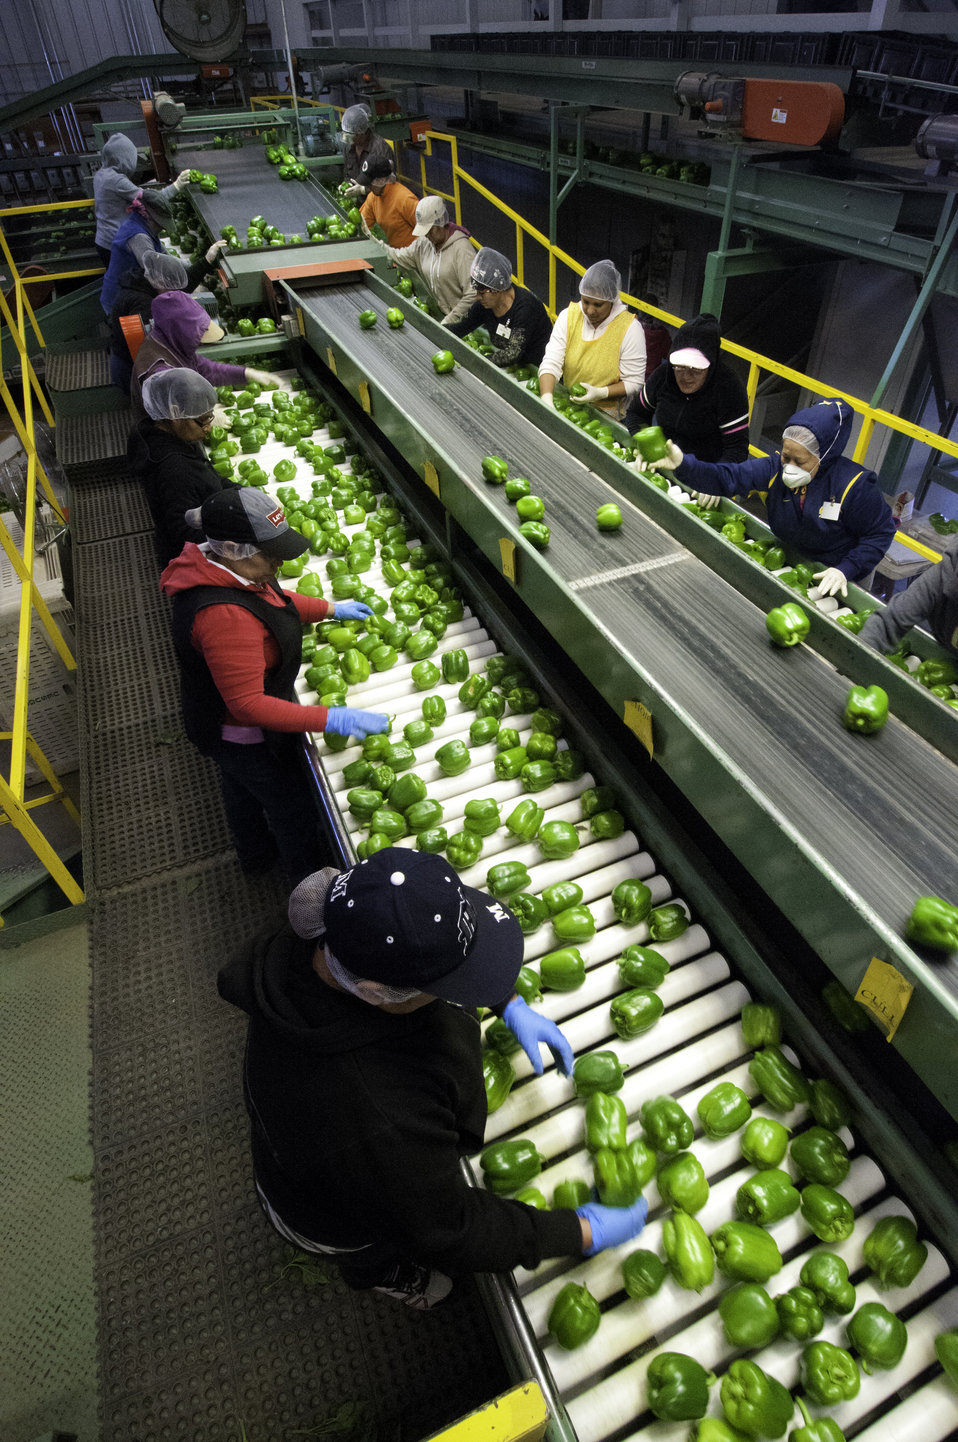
Migrant workers process green peppers on Uesugi Farms in Gilroy, CA on Wednesday, Aug. 28, 2013.